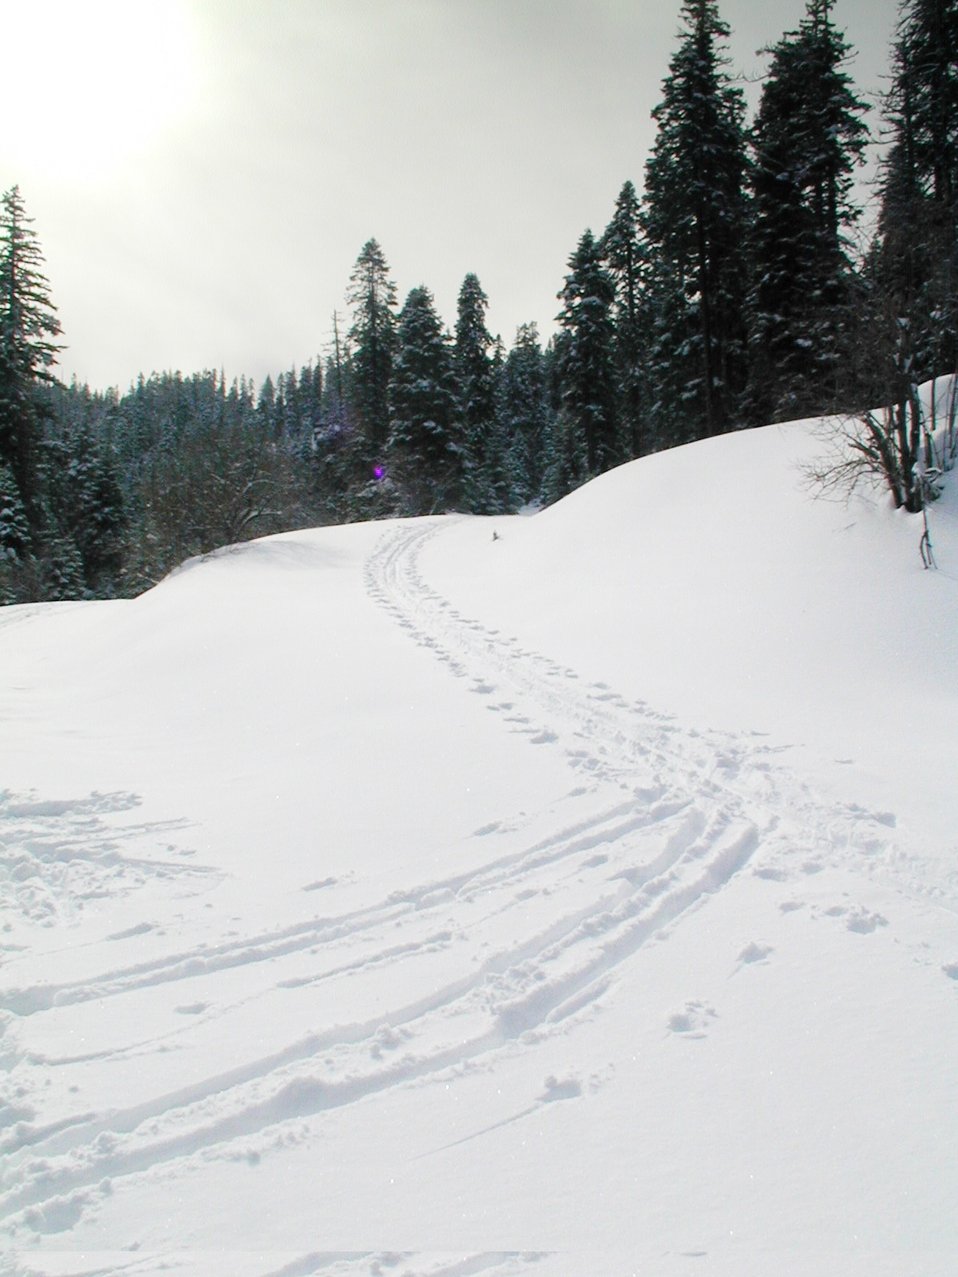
Buck Prairie Cross Country Ski Trail system consists of approximately 17 miles of interconnected trails on public and private lands on the ridges just west of Howard Prairie and Hyatt Reservoirs.